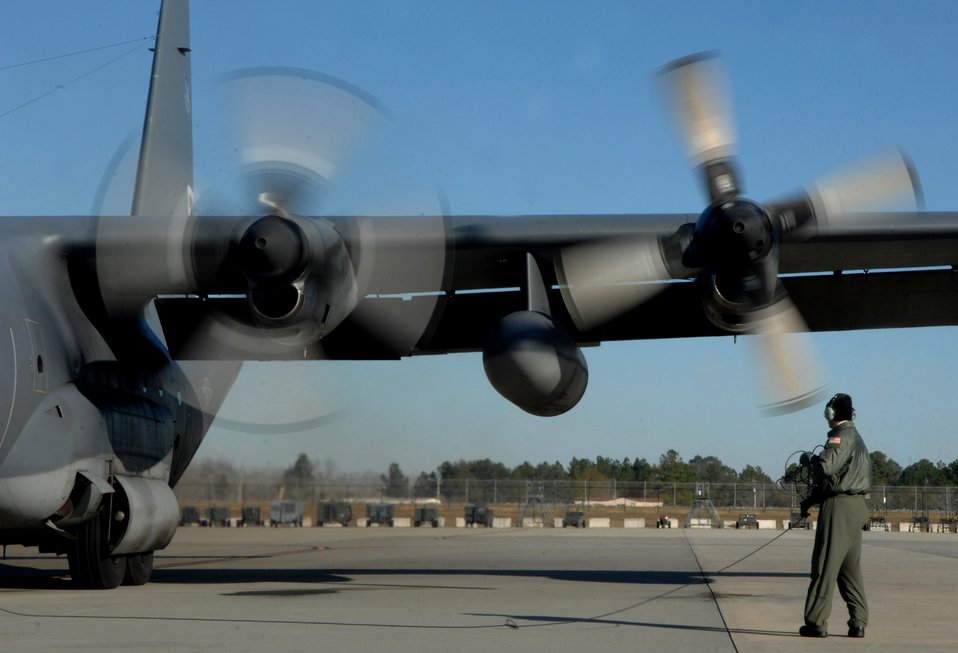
Moody muscle moves mission

Airman 1st Class Kade Bollinger performs preflight inspections on an HC-130P Combat King Jan. 3 at Moody Air Force Base, Ga. Local training missions are perfomed daily to prepare base aircrews for rescue operations worldwide. Airman Bollinger is a 71st Rescue Squadron loadmaster.